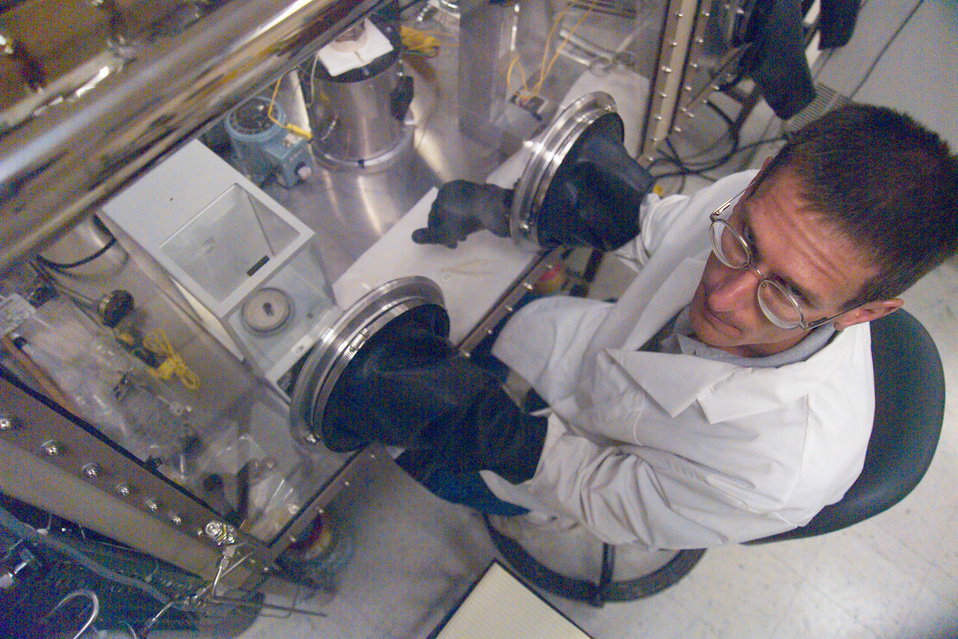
Research at STAR Facility (SAFETY TRITIUM APPLIED RESEARCH) at Idaho National Laboratory.